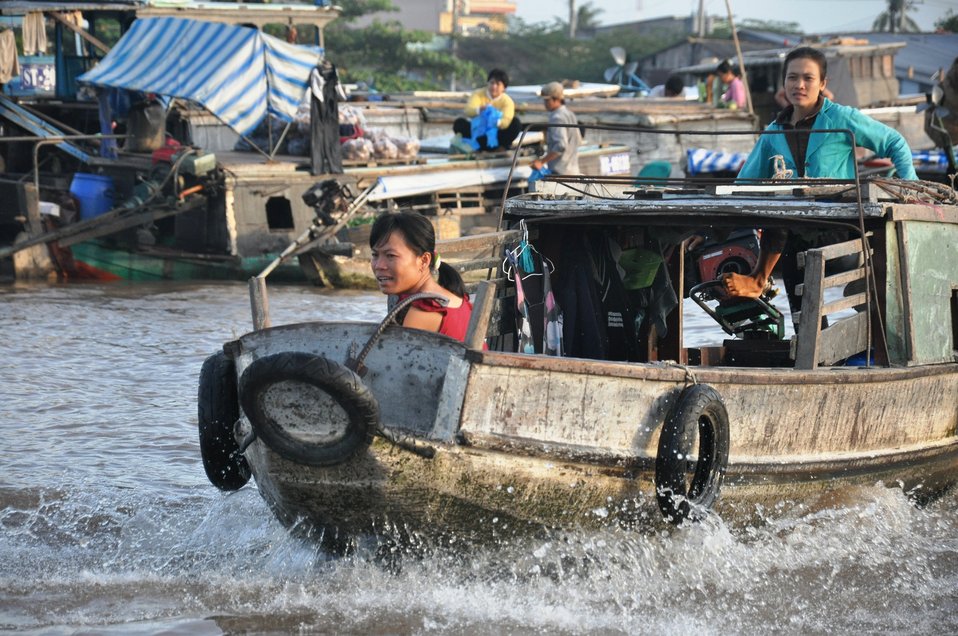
USAID supports the people of Can Tho, Vietnam with health services